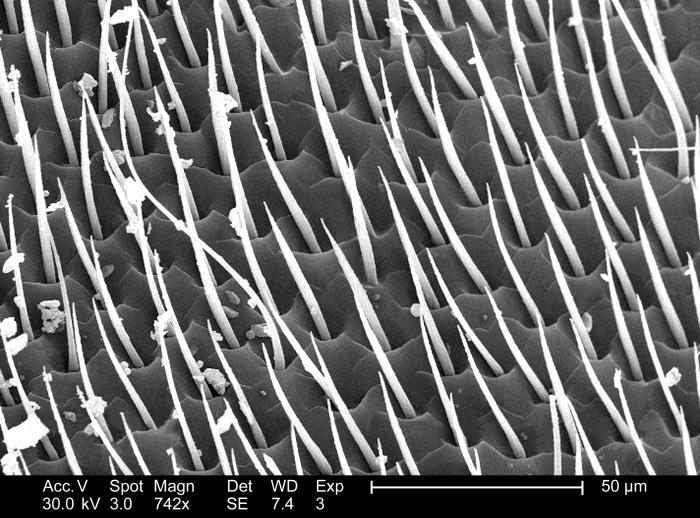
This scanning electron micrograph (SEM) depicted the magnified surface of a Western honeybee's, Apis mellifera, exoskeletal surface, revealing the multitude of small setae, or sensorial hairs invisible to the unaided eye. These setae detect changes in wind speed and direction, as well as thermal and chemical differences in the bee's environment, and are integral in the insect's pollen collecting activities; Magnified 185x.